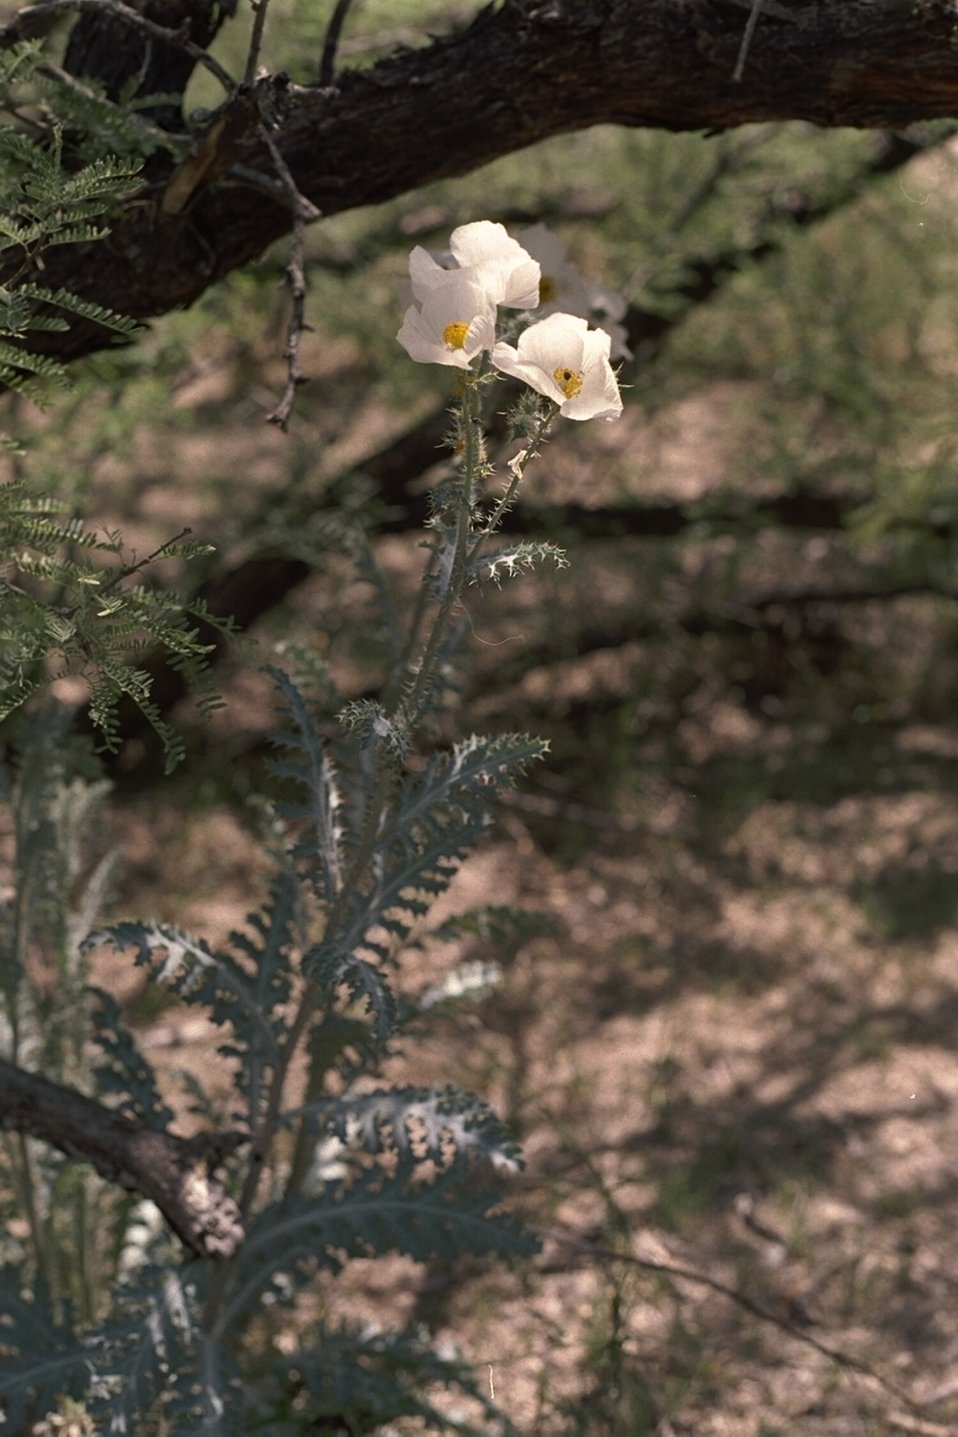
A white wildflower grows in the Agua Fria National Monument.